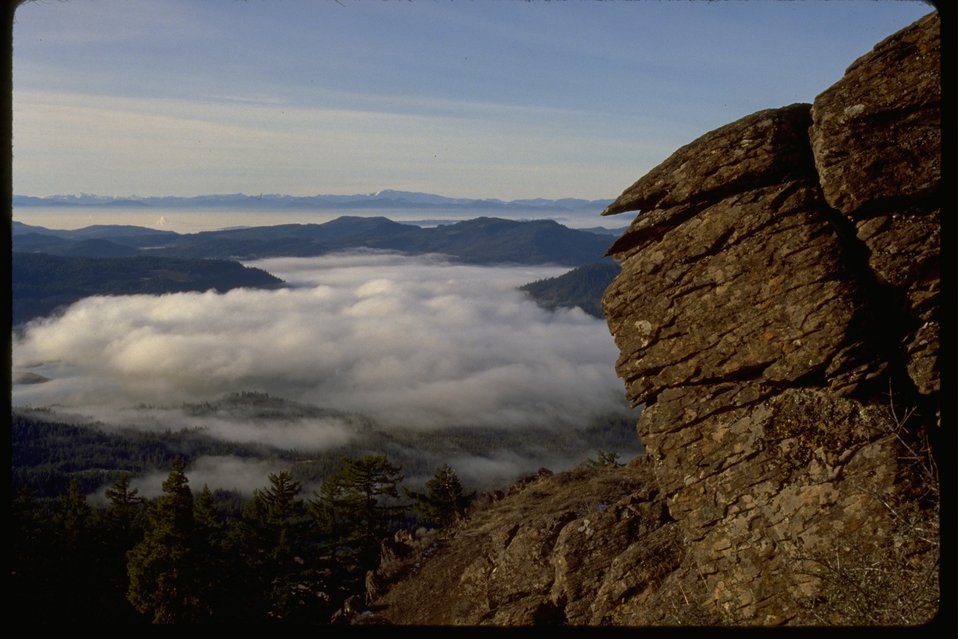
View from Flounce Rock looking out into the clouds.